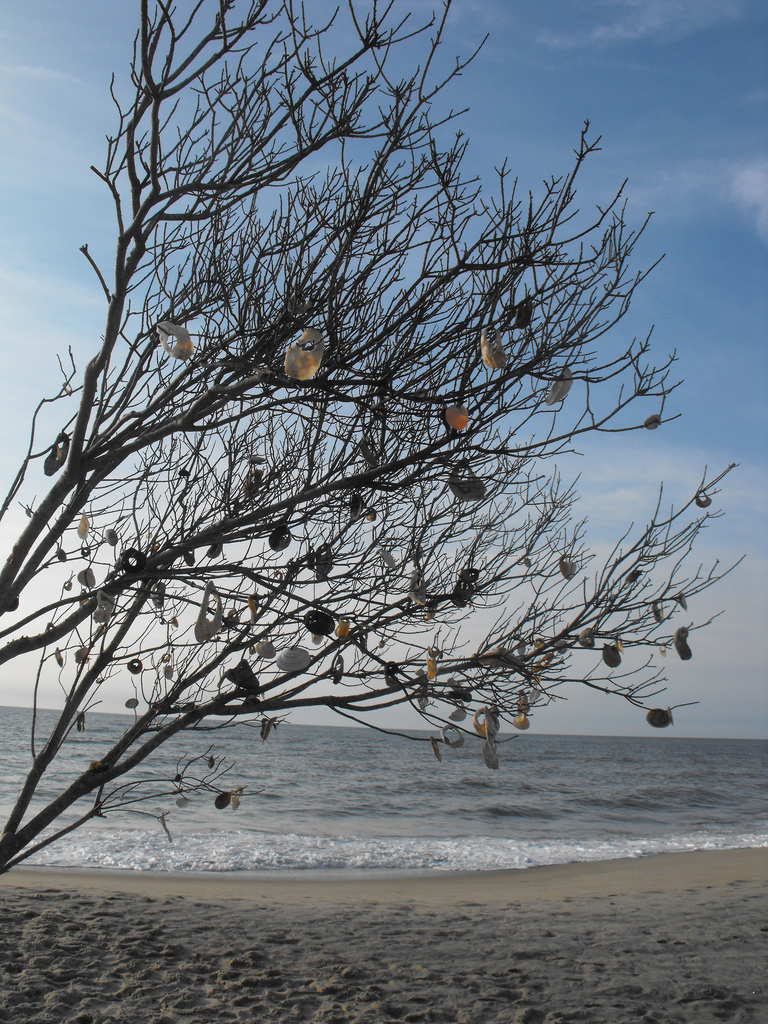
July

shell tree decorated by visitors
Chincoteaugue National Wildlife Refuge, VA